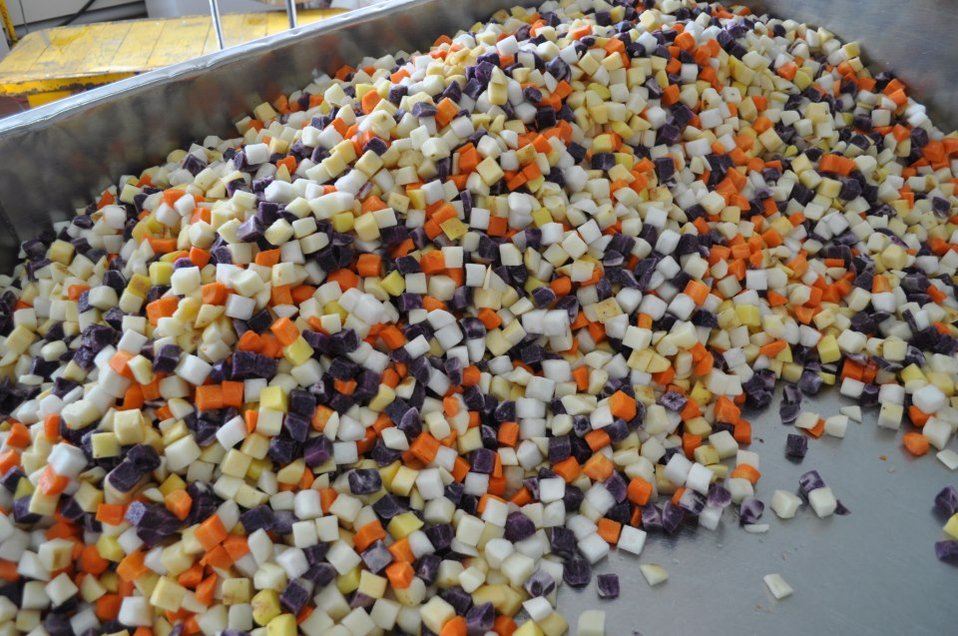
Arootook root Medley on packing table

Northern Girl will process locally-grown vegetables including potatoes, carrots, beets, turnips, rutabaga, and parsnips at its new facility in Van Buren, Maine.